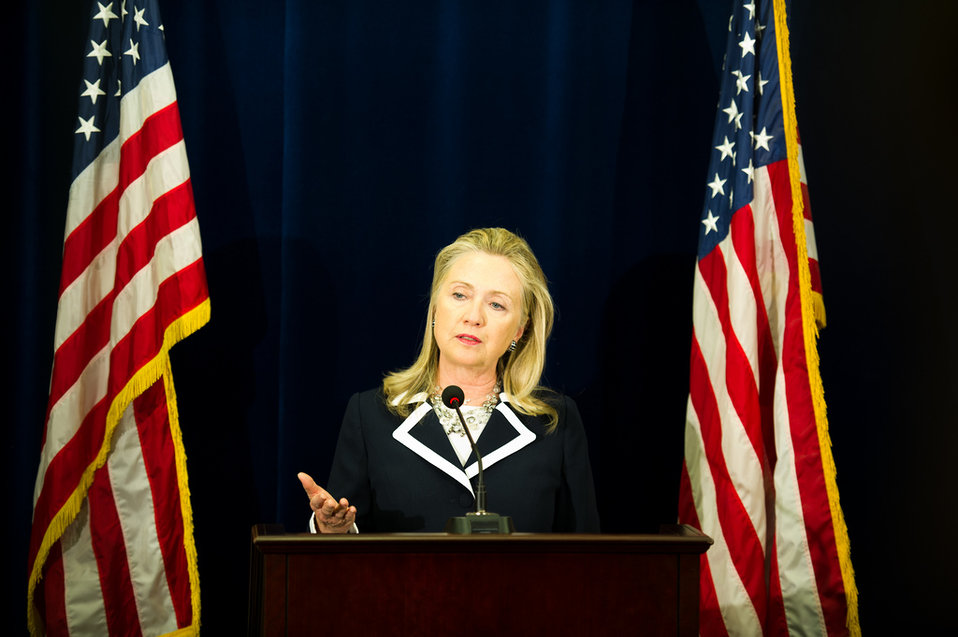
Secretary Clinton Addresses Reporters

U.S. Secretary of State Hillary Rodham Clinton addresses the media at a press conference after her meetings during the Asia-Pacific Economic Cooperation (APEC) Leaders' Week in Vladivostok, Russia, September 9, 2012.